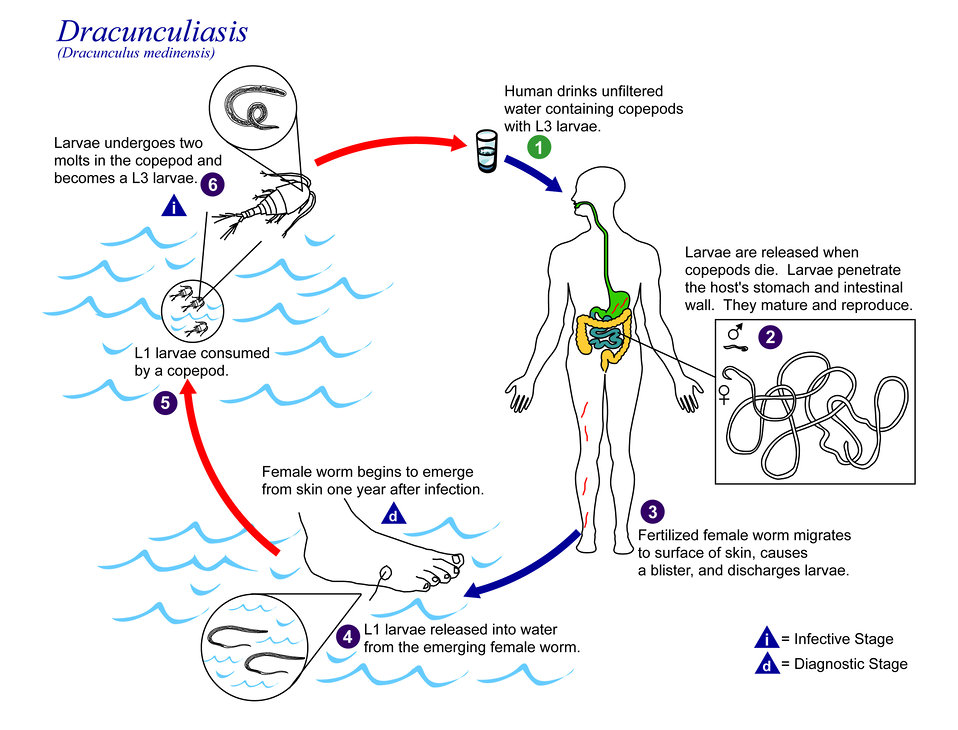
This is an illustration of the life cycle of Dracunculus medinensis, the causal agent of Dracunculiasis.